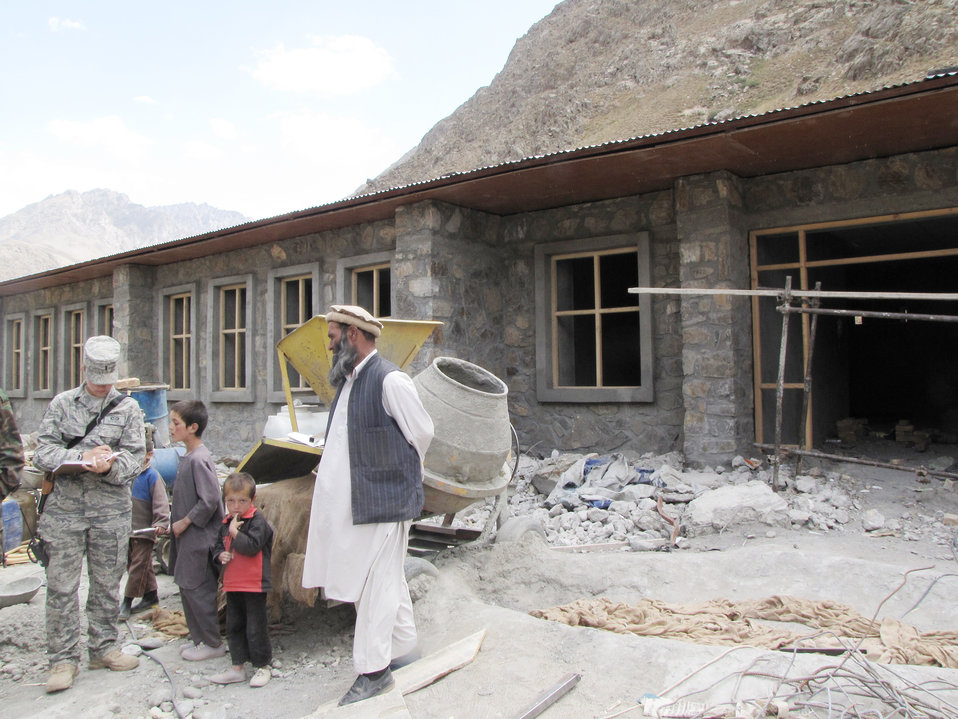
Panjshir PRT proves 'peace, partnership, progress' possible

1st Lt. Kate Miles takes notes on construction progress of a new government building Sept. 6, 2009, in Panjshir, Afghanistan. Lieutenant Miles, a civil engineer with the provincial reconstruction team, and her team ensure contractors perform work according to code. She is a Rochester, N.Y., native and deployed from Luke Air Force Base, Ariz.